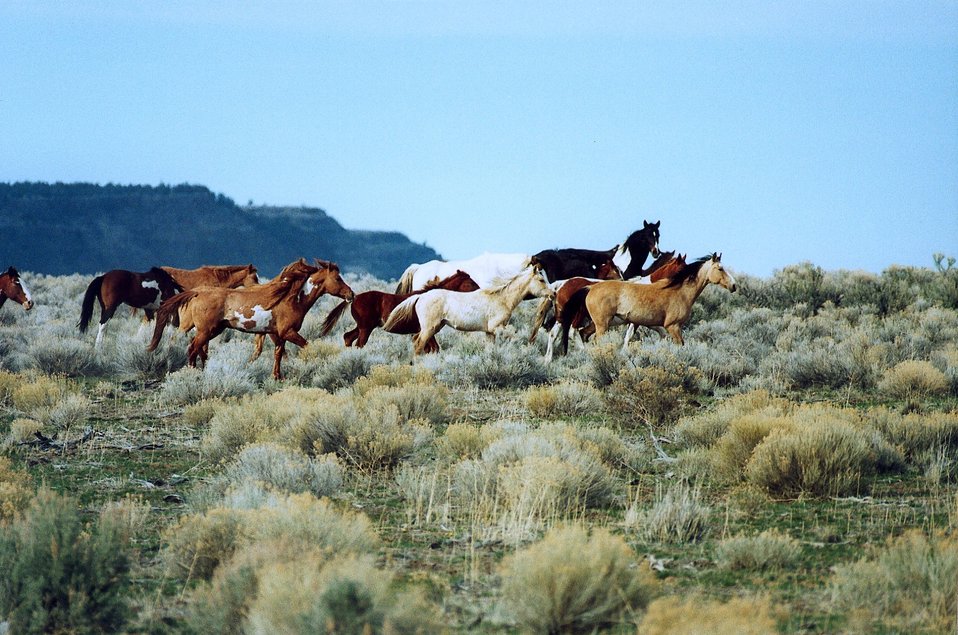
Herd of wild horses on South Steens prairie.